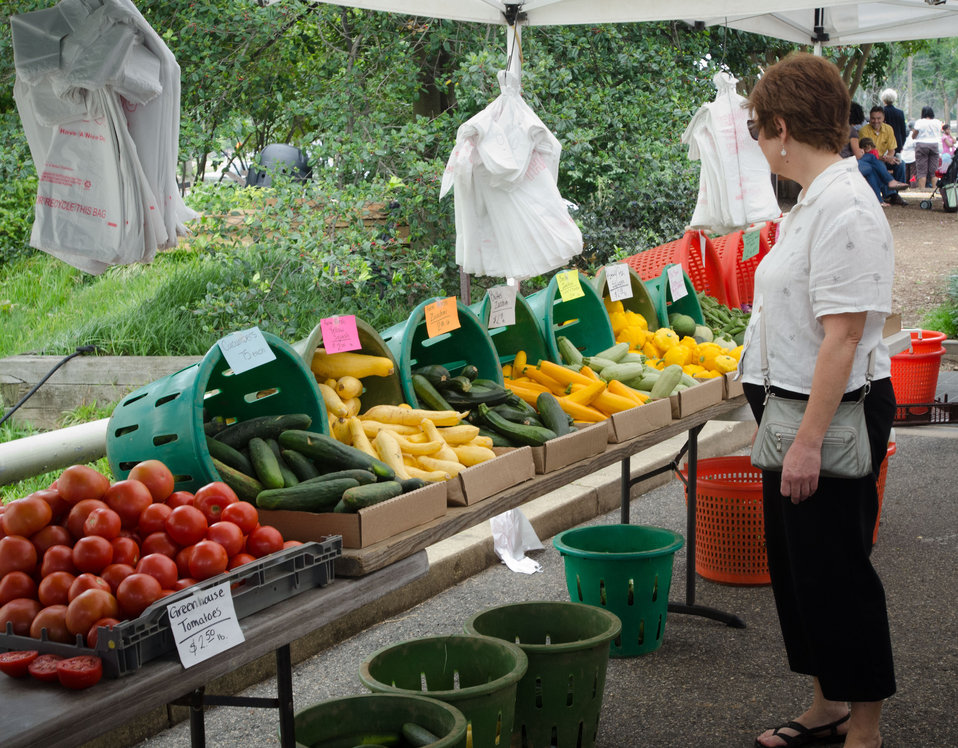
C & T Produce at the U.S. Department of Agriculture (USDA) summer farmers market opening of the 17th season at the USDA Whitten Building east parking lot in Washington, D.C., on Friday, May 31, 2012. This year's theme is Grow, Healthy, Eat Healthy & Be Healthy. USDA and Fuel Up to Play 60, in partnership with the National Dairy Council and the National Football League, invited residence, visitors and local school children to participate in opening day activities. Hip Hop Public Health featuring Easy A.D. from Cold Crush Brothers and disk jockey Artie Green play music and invite people to get up on stage to dance or hula hoop to get active. D.C. Truck Farm help people know from what plants, that certain herbs, fruit and produce come from by giving tail-gate tours of the garden growing in the bed of their pickup truck. The Peoples Garden Initiative and USDA Executive Master Gardeners gave away a variety of fruit and produce seedlings to include the Tomato ‘Abraham Lincoln’ in celebration of the USDA 150th Anniversary and to share their harvest. New features for 2012 include an on-site sign language interpreter, a hand washing station, and a USDA-certified organic vendor. Other products selling today are fresh fruits, vegetables, herbs, baked goods, meats, kettle popcorn, local honey, hand-made soap and more.